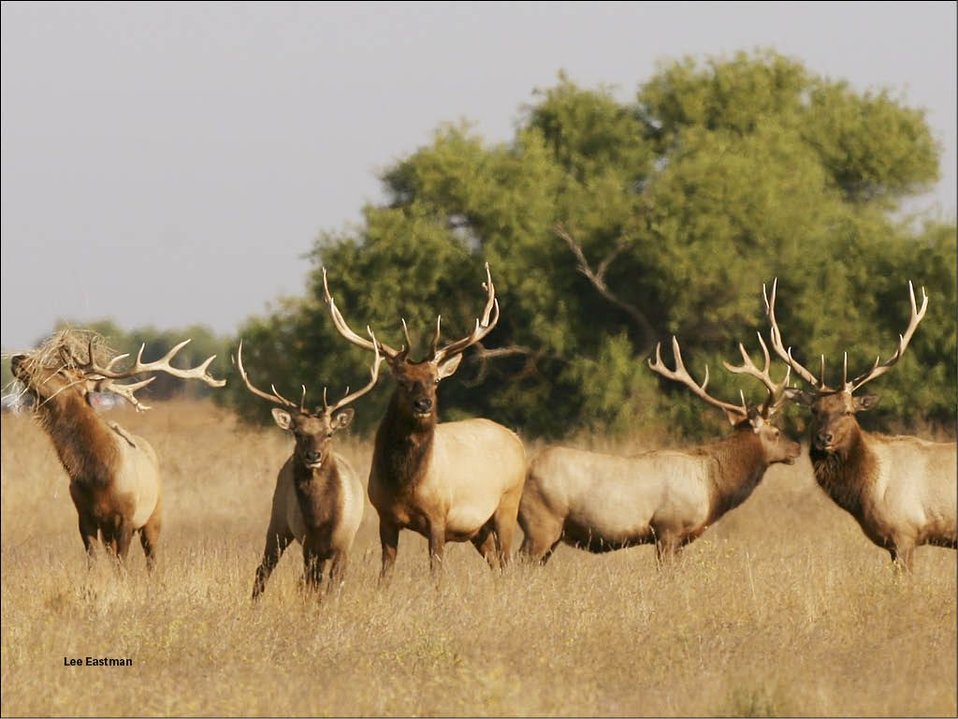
Tule Elk San Luis NWR Lee Eastman USFWS

California’s native Tule elk were driven to the edge of extinction by hunting and habitat loss, with perhaps as few as 10 or 20 surviving animals left at one point in the 20th century. In 1974 a herd of 18 Tule elk were brought to San Luis National Wildlife Refuge, where they have thrived.